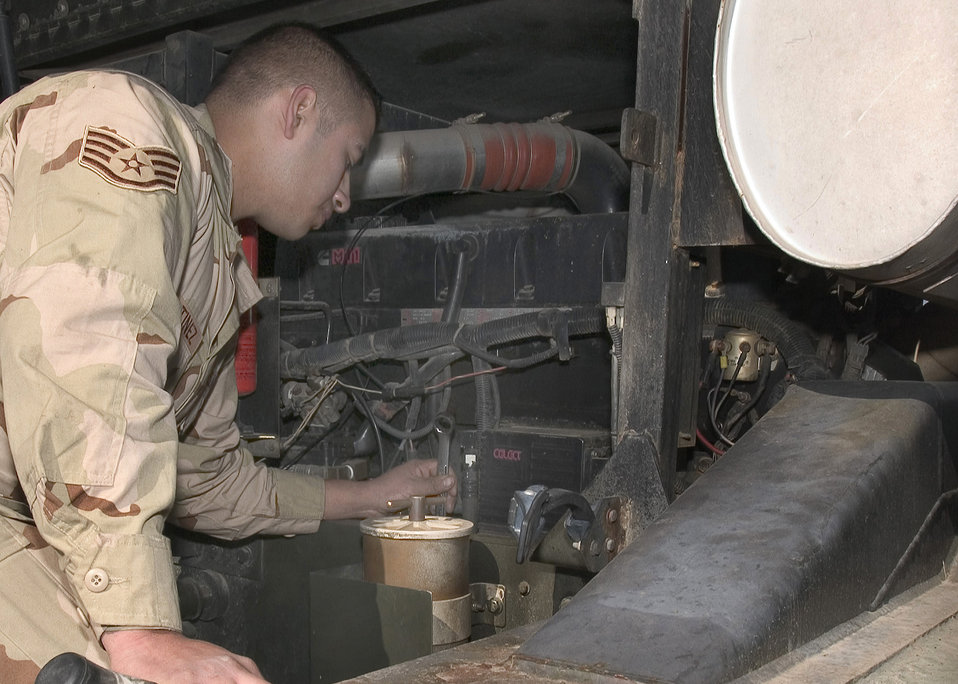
Saving the Condor

MANAS AIR BASE, Kyrgyzstan -- Staff Sgt. Rodrigo Martinez inspects the starter on the diesel motor of the Condor de-icing vehicle while performing repairs. He is a vehicle maintainer with the 376th Expeditionary Logistics Readiness Squadron here and is deployed from Dyess Air Force Base, Texas.